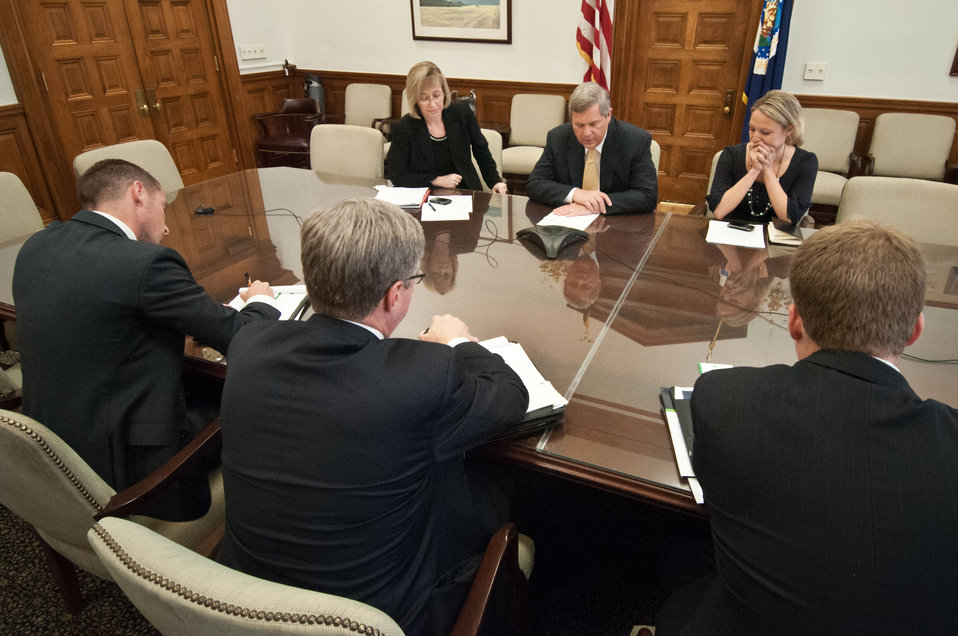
From left: Director, External and Governmental Affairs, Jennifer Yezak, Agriculture Secretary Tom Vilsack and Confidential Secretary, Lindsay Daschle held a conference call with Rural Council stakeholders to discuss the economy of rural America at the United States Department of Agriculture in Washington, D.C., on Thursday, April 26, 2012. Stakeholders invited to join the conference call were from left: Ben Husch, National Conference of State Legislatures, Brian Cavey, National Rural Electric Cooperative Association and Leif Oveson, National Telecommunications Cooperative Association.